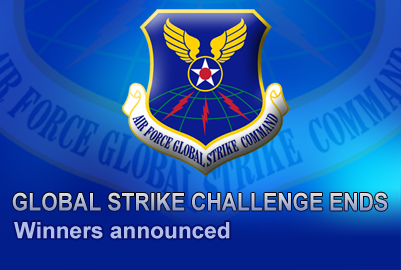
Global Strike Challenge